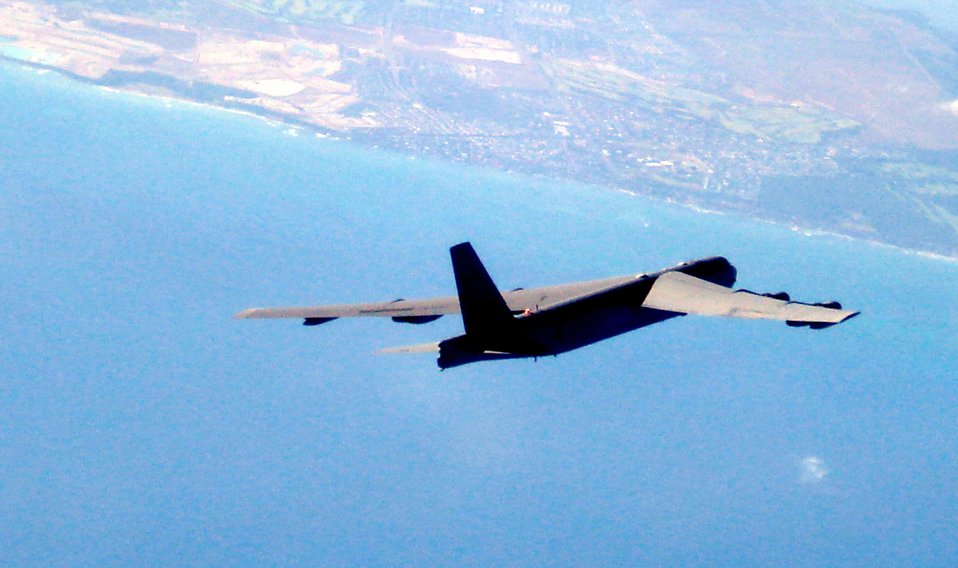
B-52s demonstrate global reach, global power

A B-52 Stratofortress heads toward its target at Pele Bombing Range, Hawaii. In September's Exercise Koa Lightning, B-52 aircrews dropped inert weapons on their targets for the first time. The aircraft were talked in to the targets by joint terminal air controllers on the ground. This training is critical in the war on terrorism, enhances security in the Western Pacific and provides integrated training opportunities.